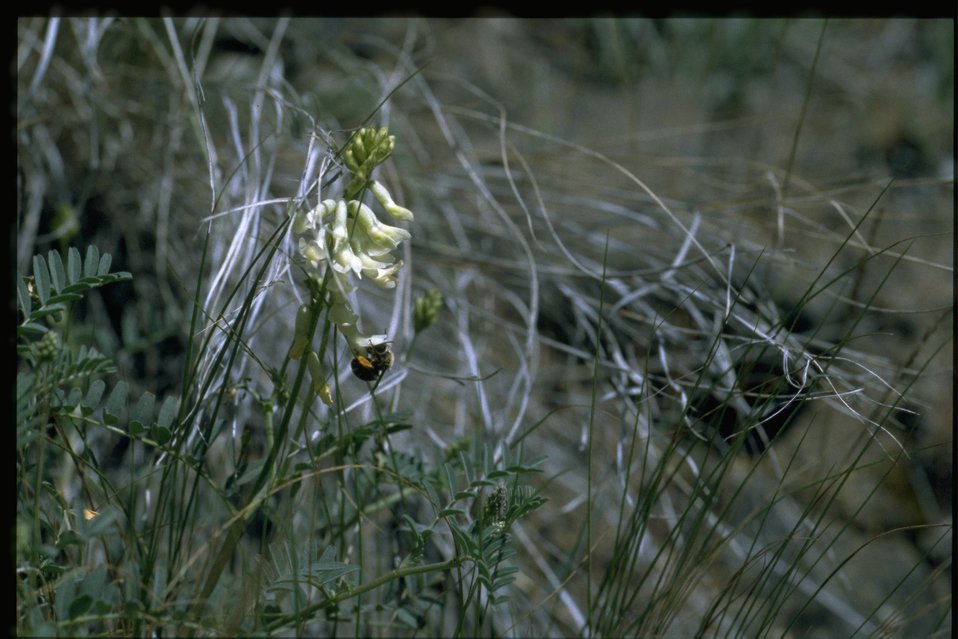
Farshot of curvepod milkvetch (Astragalus curvicarpus).